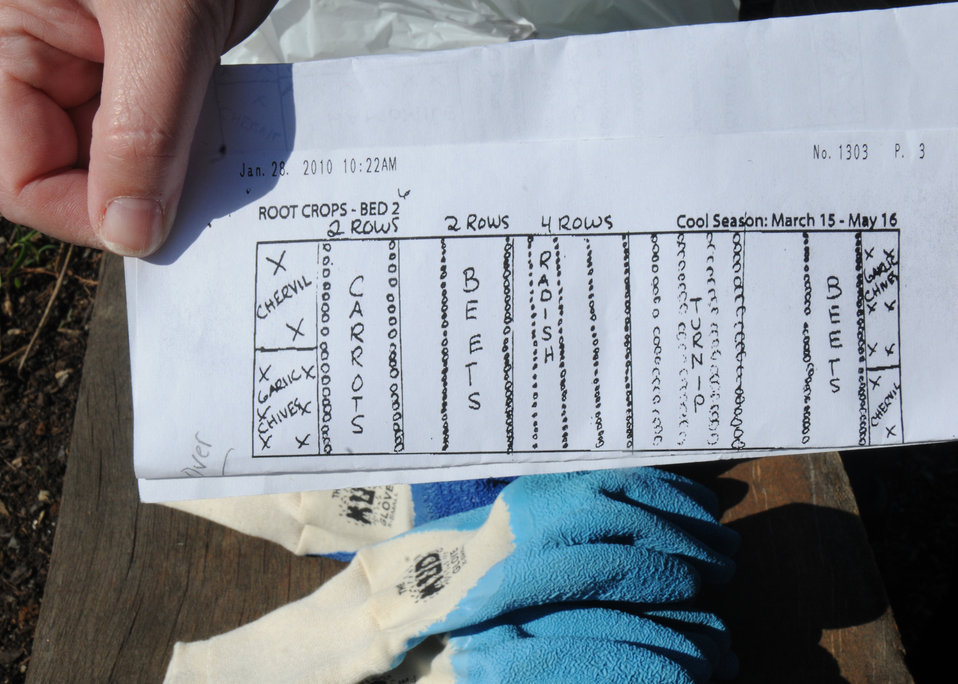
A planting chart for bed two is used to mark the placement of plants in the U.S. Department of Agriculture’s (USDA) People’s Garden. USDA photo 10di1300-32